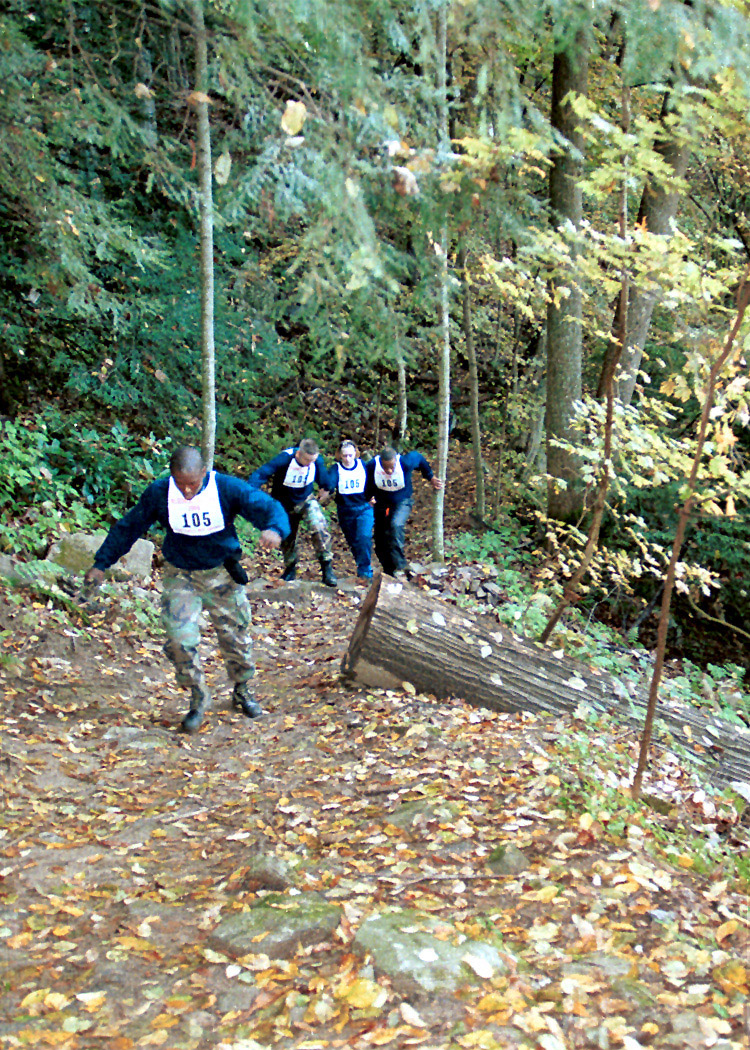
Wilderness Challenge

FAYETTEVILLE, W. Va. -- Team members from the Air Combat Command Communications Group at Langley Air Force Base, Va., trek up a steep hill during a 6.2-mile forced march to kick off the inaugural Wilderness Challenge 2000 competition near the New River Gorge National River in West Virginia. The Langley team was one of three Air Force teams competing in the all-service contest.